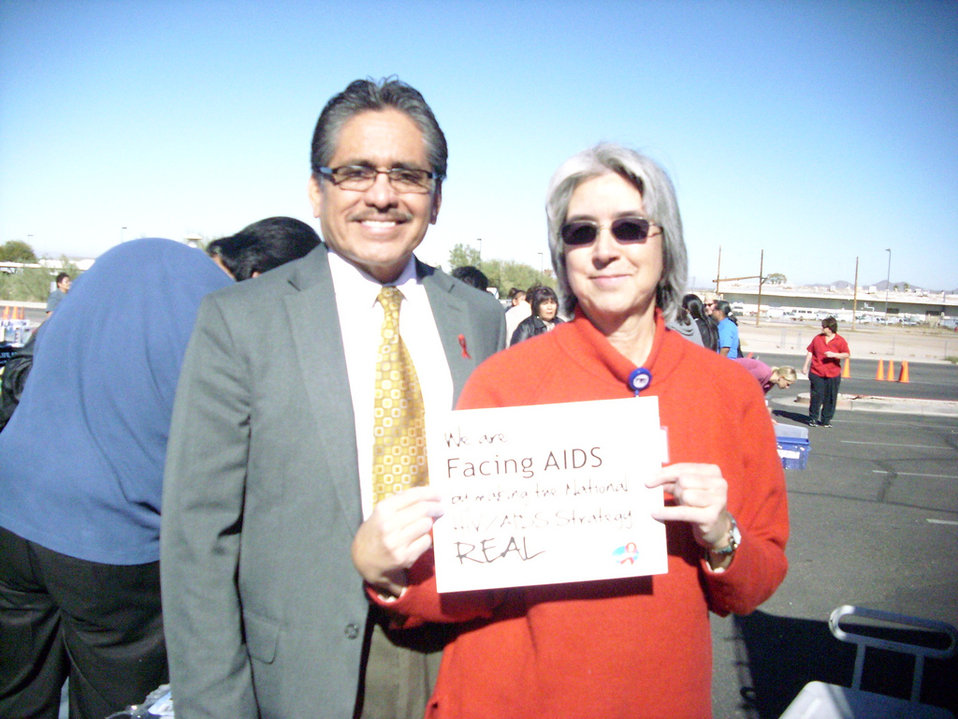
We are Facing AIDS through NHAS-13